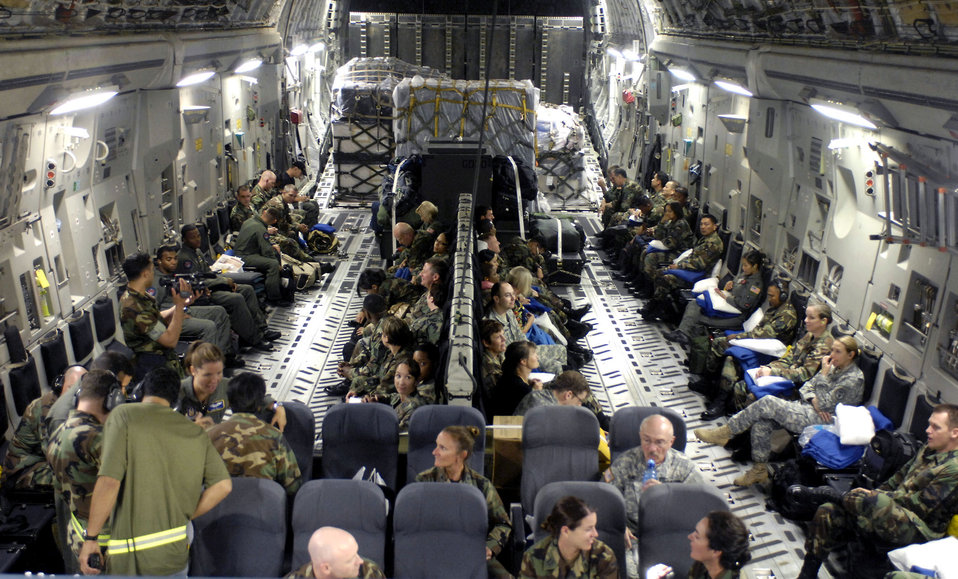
Medics on the move

Medical personnel wait to depart for a humanitarian mission on a C-17 Globemaster III at Hickam Air Force Base, Hawaii July 20, 2007. Approximately 50 Air Force, Army and Navy personnel will travel to Vanuatu, Kiribati and Nauru to provide medical, dental and engineering support to the local residents.